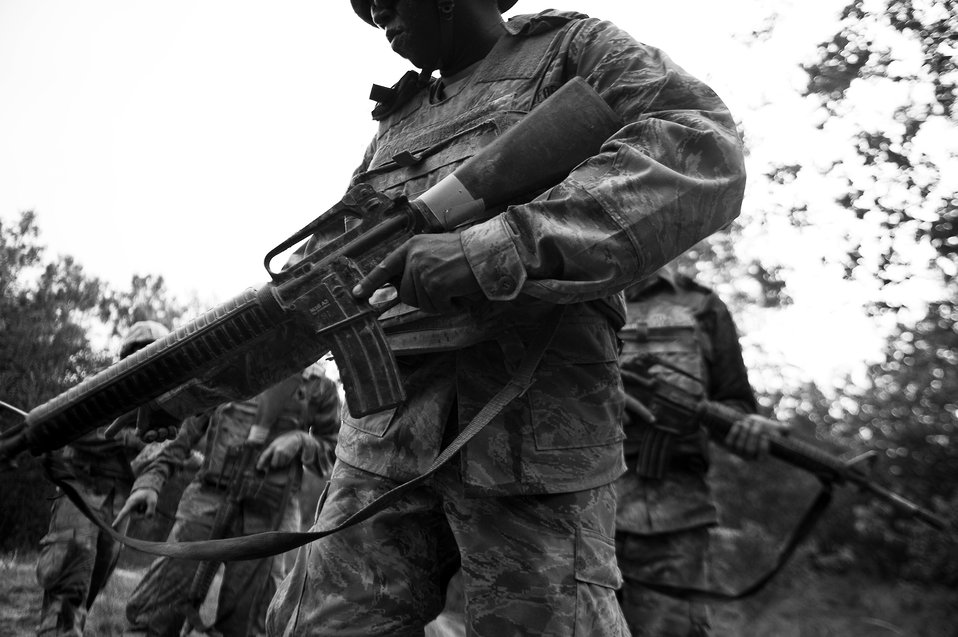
BEAST

Basic trainees go through their sixth week of Air Force basic military training at the Basic Expeditionary Airman Skills Training on May 25, 2011, at Lackland Air Force Base, Texas.